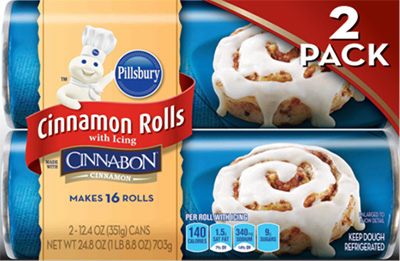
RECALLED – Pillsbury Cinnamon Rolls with Icing

September 6, 2013 – Product Recall –
General Mills Announces Voluntary Recall of Limited Quantity of Refrigerated Pillsbury Cinnamon Rolls With Icing.